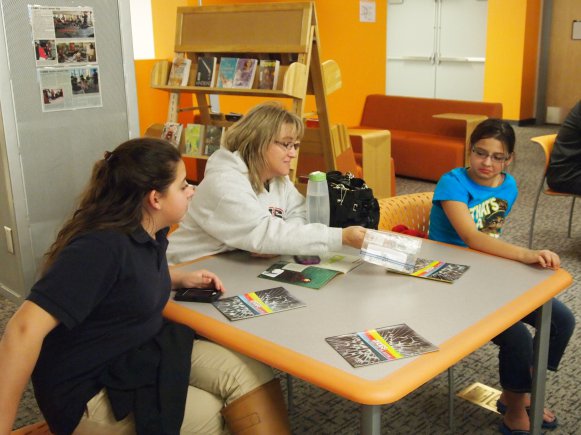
National Drug Fact Week. Police, students, parents talk, share facts

Photo Credit: Gabrielle Kuholski
Shannon Wise (center) and her daughters Samantha (left), 13, and Maryssa, 12, look at marijuana in a plastic bag during a drug presentation made by the Sierra Vista Police Department Community Response Team. Two detectives from the team visited the Colonel Smith Middle School Library Jan. 30 to deliver a session on drug prevention.